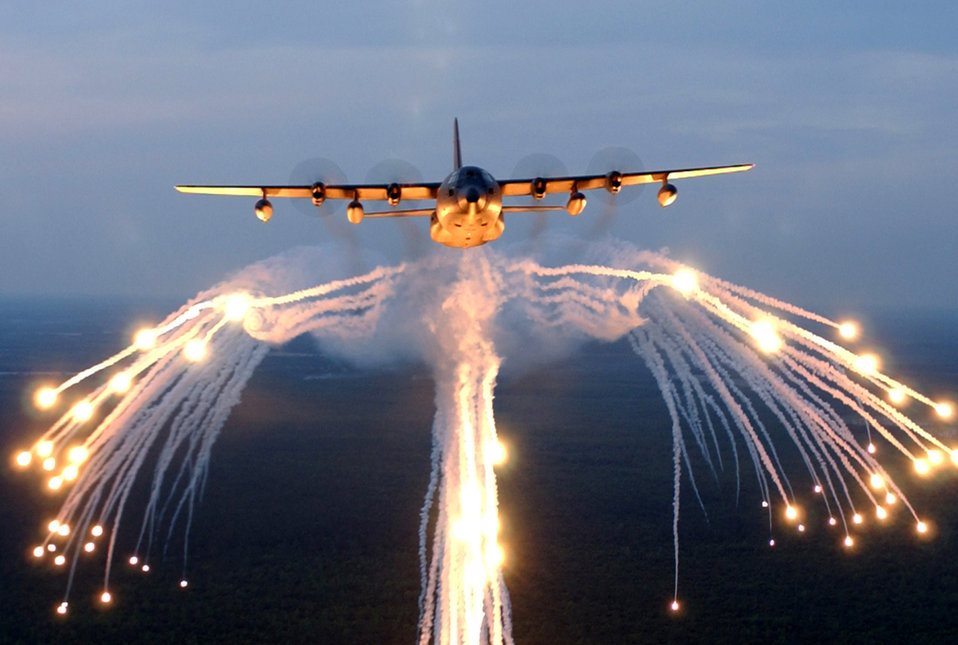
Air Force officials announce classic association at Kirtland AFB

The Chief of Staff of the Air Force Gen. Norton Schwartz recently approved the creation of a classic associate unit by aligning elements of the 150th Wing and 58th Special Operations Wing at Kirtland AFB, N.M. The primary mission for the new associate unit includes flying training for HC-130P King, MC-130P Combat Shadow, HH-60 Pave Hawk, and UH-1 Iroquois aircraft. Guardsmen from the 150th Wing have already begun training for this mission.